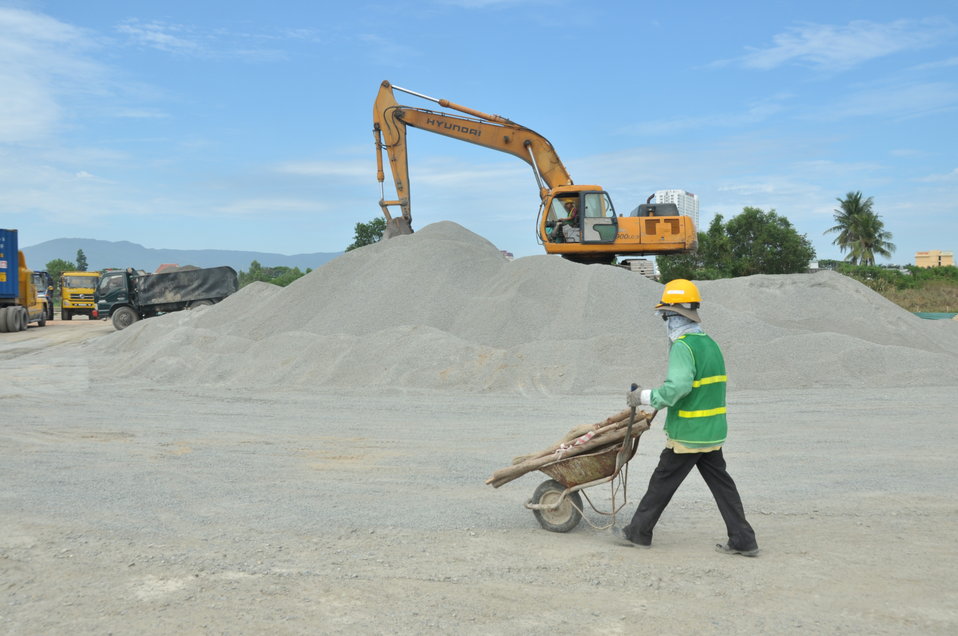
Site construction at the Environmental Remediation of Dioxin Contamination at Danang Airport

Progress at the Danang Airport remediation site
April 23, 2013